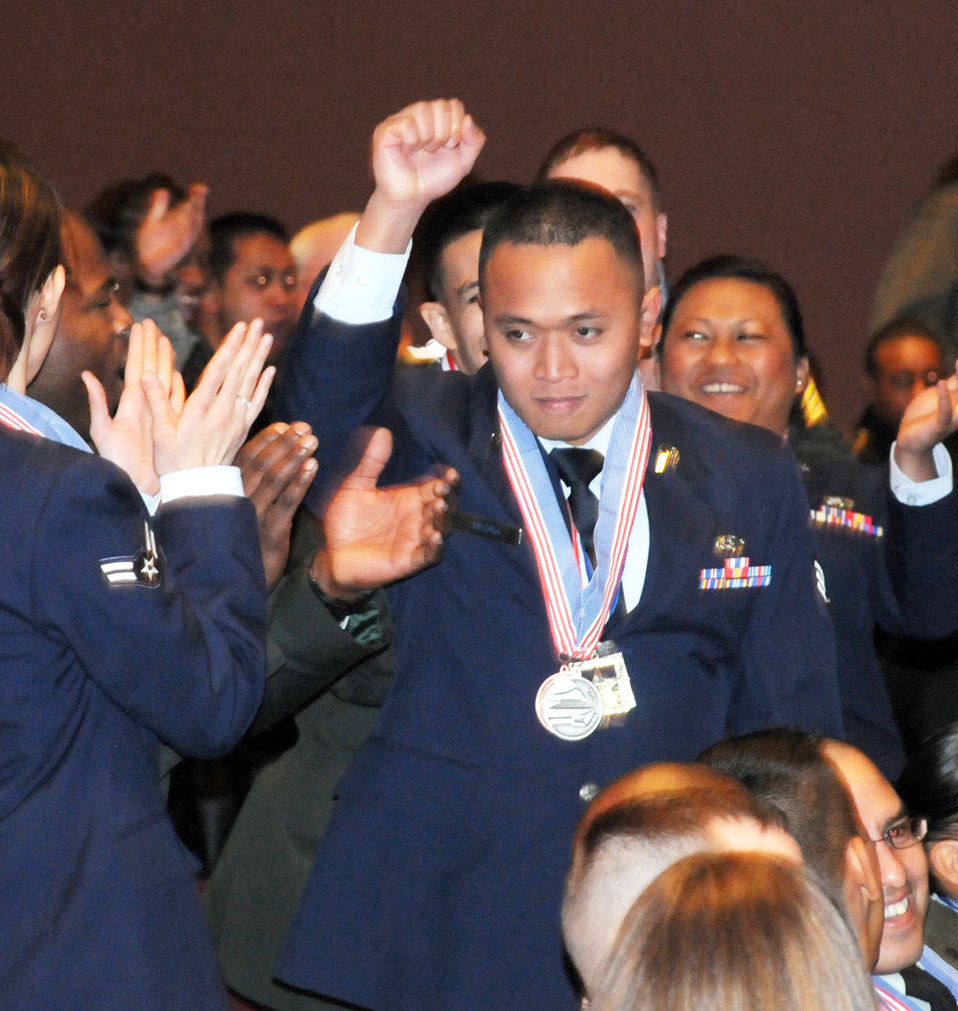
Junior Chef of the Year

Senior Airman Ghil Medina celebrates after being named Junior Chef of the Year March 11, 2011, at the 36th Annual Culinary Arts Competition awards ceremony at Fort Lee, Va. Airman Medina is the first Airman to win the title, which is traditionally held by the Army. The annual culinary competition showcases the talents of U.S. Armed Forces food specialists worldwide. Airman Medina is assigned to Joint Base Langley-Eustis, Va.